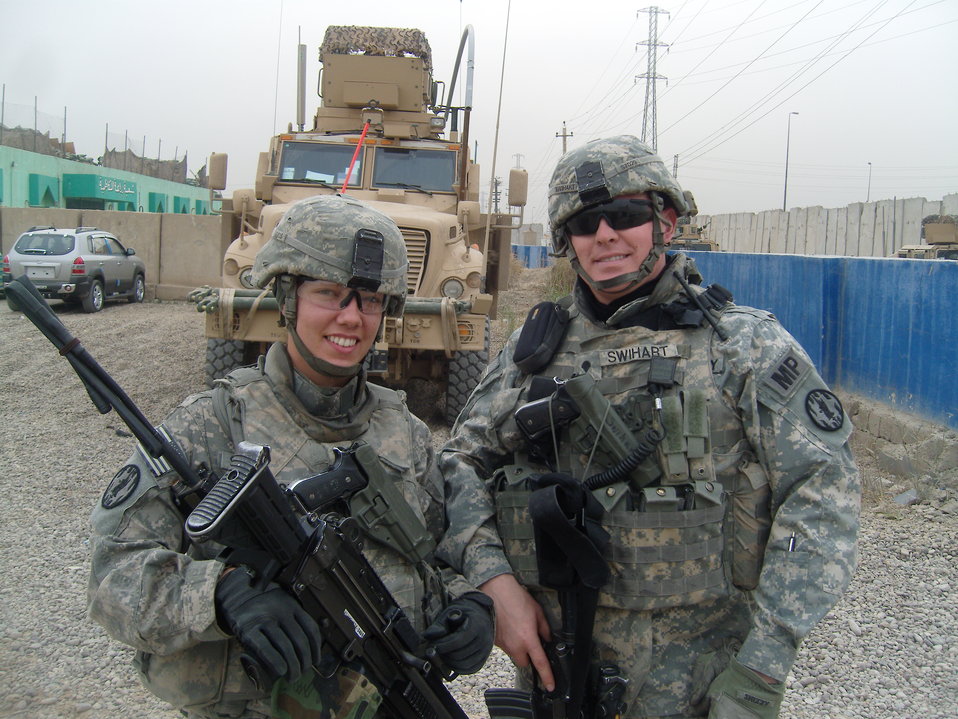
Chris Swihart and wife Danielle

Christopher Swihart served as a Military Policeman in the National Guard and the U.S. Army from 2004-2010. He served two years in Iraq (Operation Iraqi Freedom) from 2007 to 2009. Chris is currently a tractor operator at Sacramento National Wildlife Refuge.